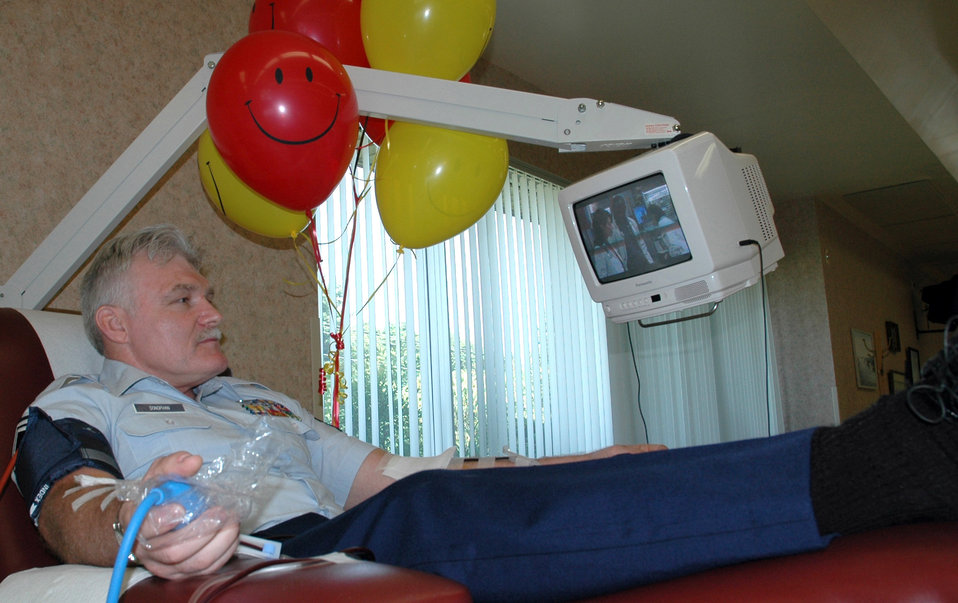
Reservist gives 'gift of life' 100 times

DOVER, Del. -- Senior Master Sgt. Carl Donophan donates platelets for the 100th time July 22, a rare achievement which took him 13 years to accomplish. Since the Blood Bank of Delmarva opened in the 1970s, only 27 people in Delaware have reached this milestone. He is a reservist with the 512th Equipment Maintenance Squadron at Dover Air Force Base.